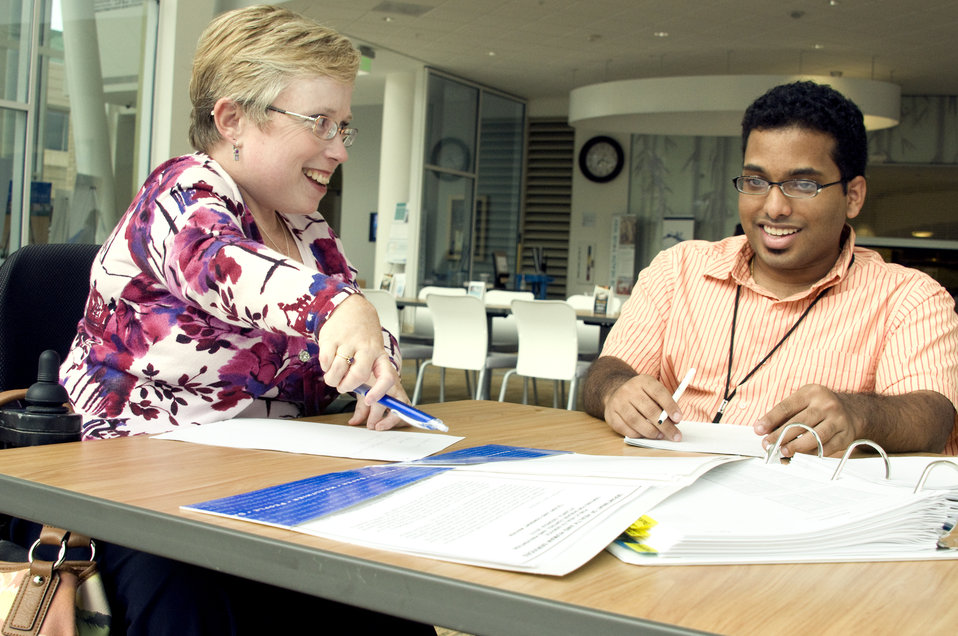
This image depicts two people who'd met on a Centers for Disease Control (CDC) Atlanta, Georgia campus in order to conduct a meeting. Both were seated in wheelchairs, and both appear to have overcome their disabilities, carrying out their daily activities with the need of little assistance. What was important, was the highly-accessible environment made available to these individuals, which is an organization-wide goal, and which included access to all campus facilities.